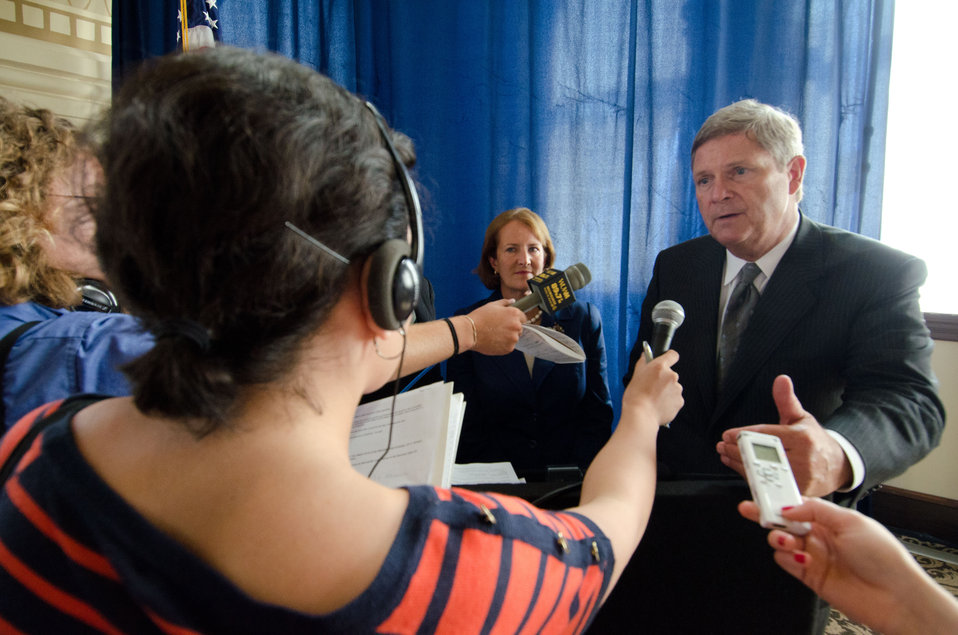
Agriculture Secretary Tom Vilsack meets with members of the press after speaking at the National Export Initiative (NEI) Small Business Tour in Milwaukee, WI, on Wednesday, August 3, 2011. An important goal of the NEI is to provide additional assistance to small and medium-sized businesses, which are major drivers of job creation. The NEI is assisting small and medium-sized businesses win more foreign government contracts, find buyers worldwide, participate in more trade missions and trade shows, receive more export financing, and learn new ways to sell products and services overseas.